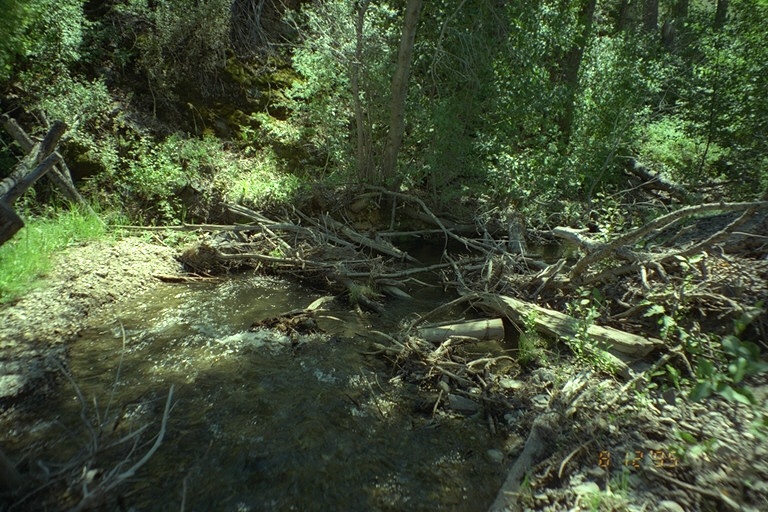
Riparian area Public Lands Salmon Field Office UCSC Upper Columbia Salmon Clearwater District